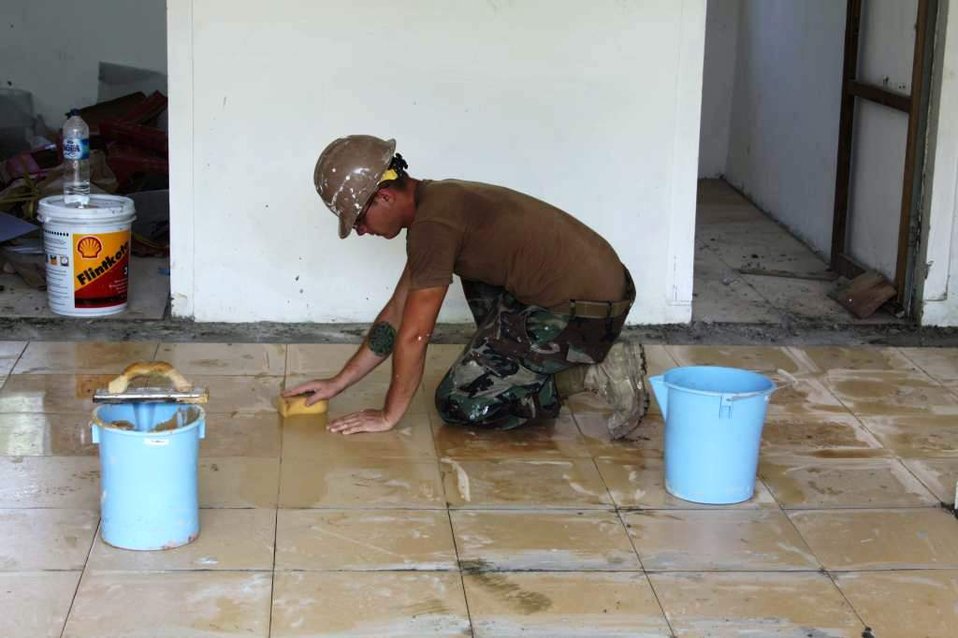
Constructionman Builder Matthew Ernst Cleans Freshly Laid Tile in the In-Patient Ward

Constructionman Builder Matthew Ernst, assigned to Naval Mobile Construction Battalion (NMCB) 11 out of Gulfport, Mississippi, cleans freshly laid tile in the in-patient ward of the Daruba Hospital engineering site on July 12, 2010, in Morotai, Indonesia. The engineering project is part of Pacific Partnership 2010, the fifth in a series of annual U.S. Pacific Fleet humanitarian and civic assistance endeavors to strengthen regional partnerships.